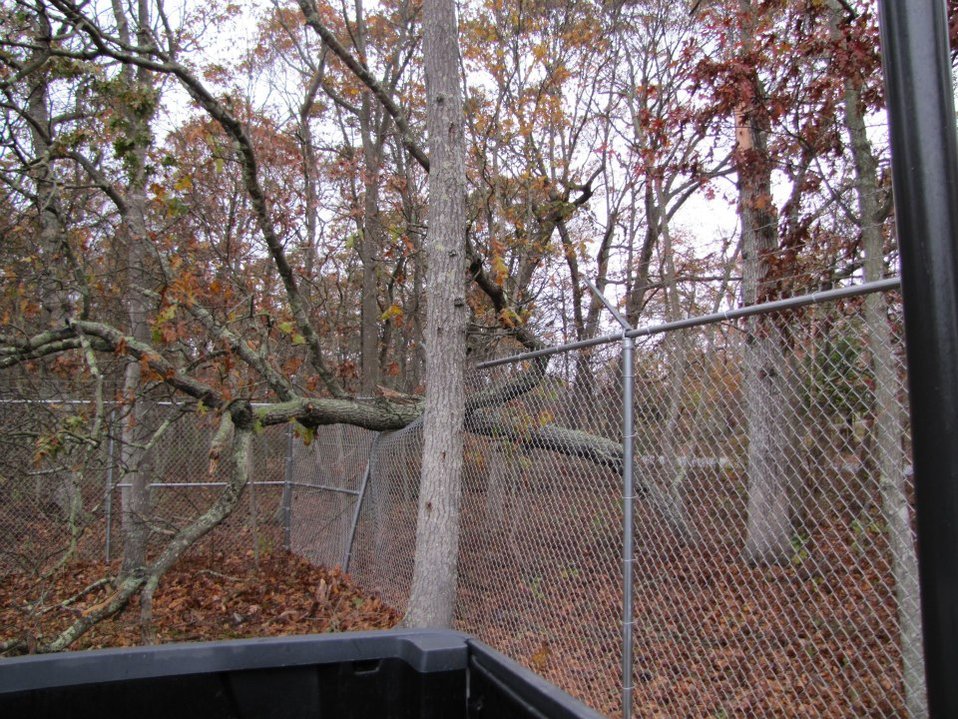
Hurricane damage at Long Island National Wildlife Refuge Complex (NY)

Felled tree on fence at the refuge.